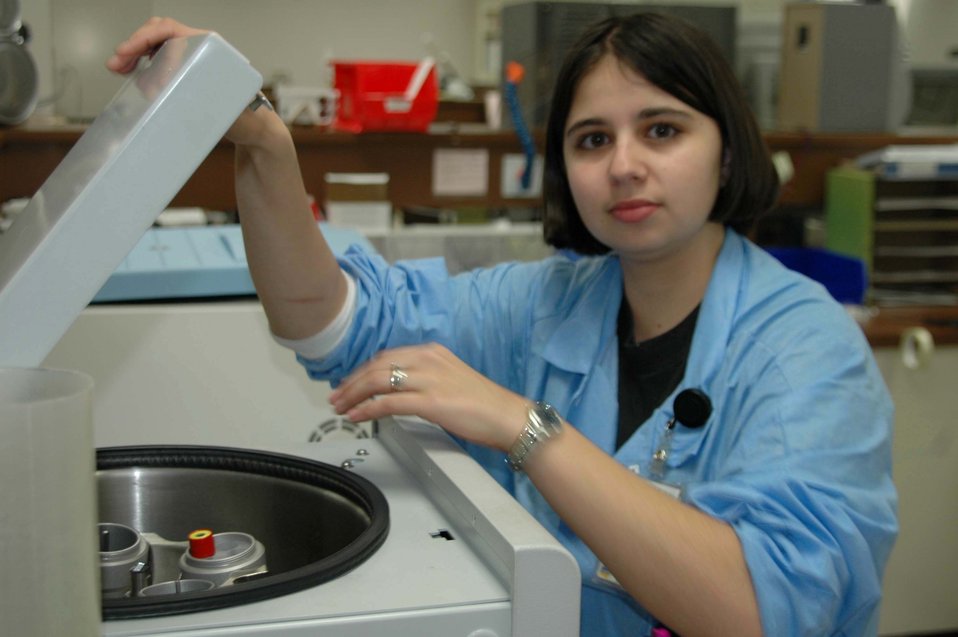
College of American Pathologists lauds Ellsworth lab

Airman 1st Class Danielle Woodcock loads a vial of blood into a centrifuge, a device that separates materials of different density. Airman Woodcock is a medical laboratory technician assigned to the 28th Medical Support Squadron at Ellsworth Air Force Base, S.D. The lab recently was accredited by the College of American Pathologists